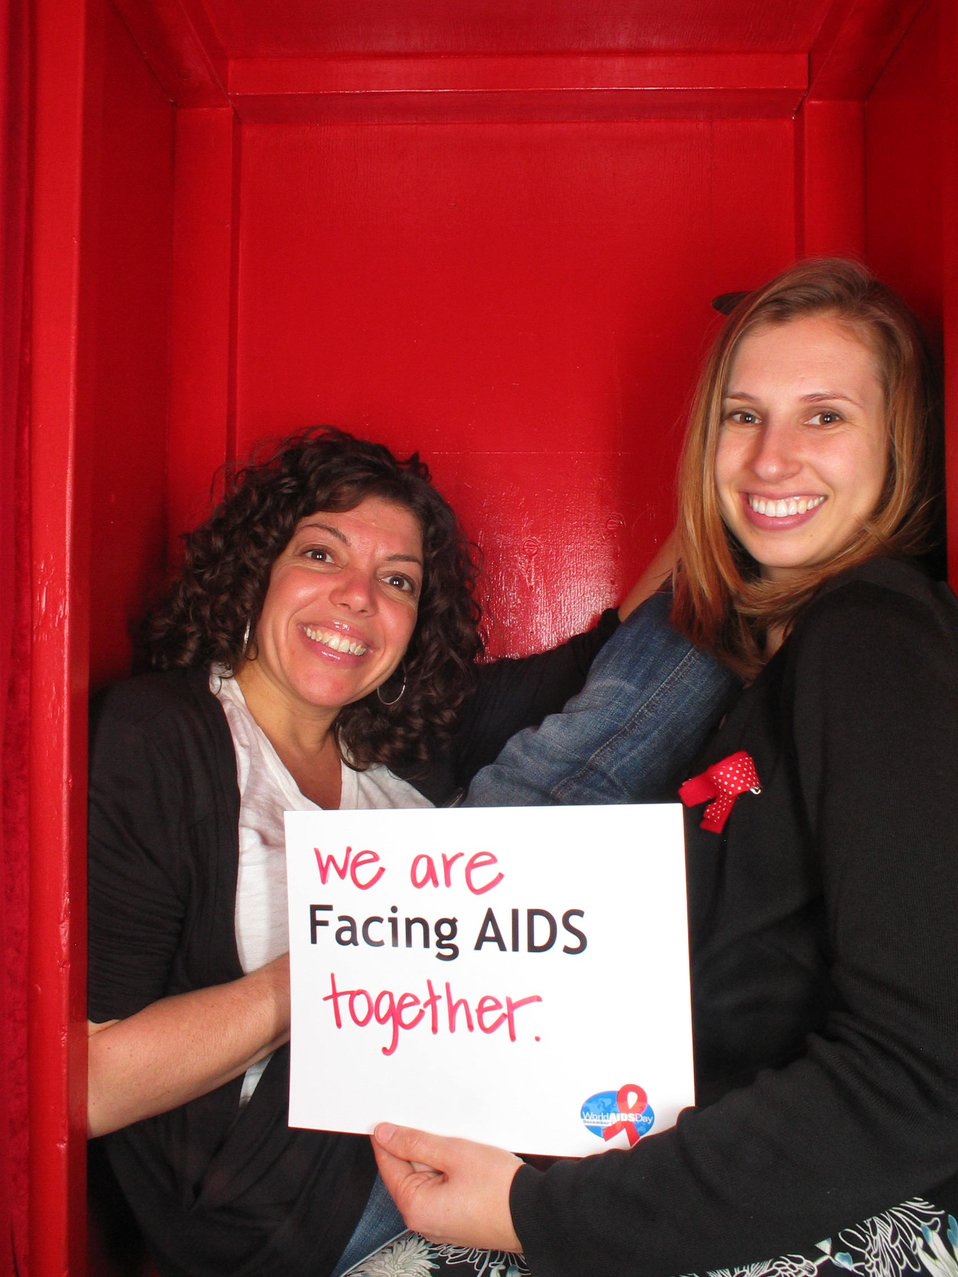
We are Facing AIDS together.